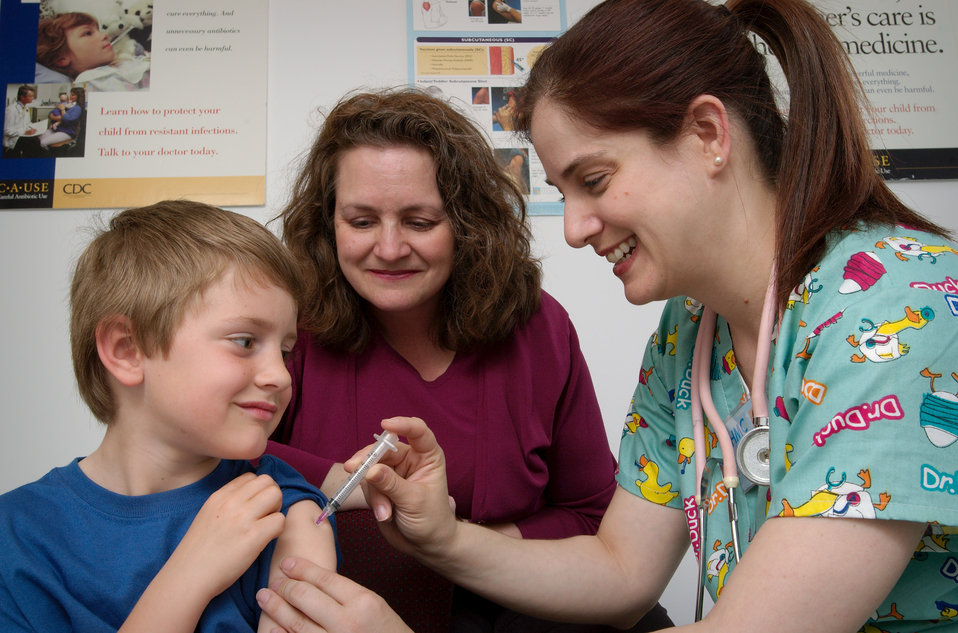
With his mother looking on from behind, this 2006 photograph showed a nurse in the process of administering an intramuscular vaccination in the left shoulder muscle of this young, pre-teen boy.